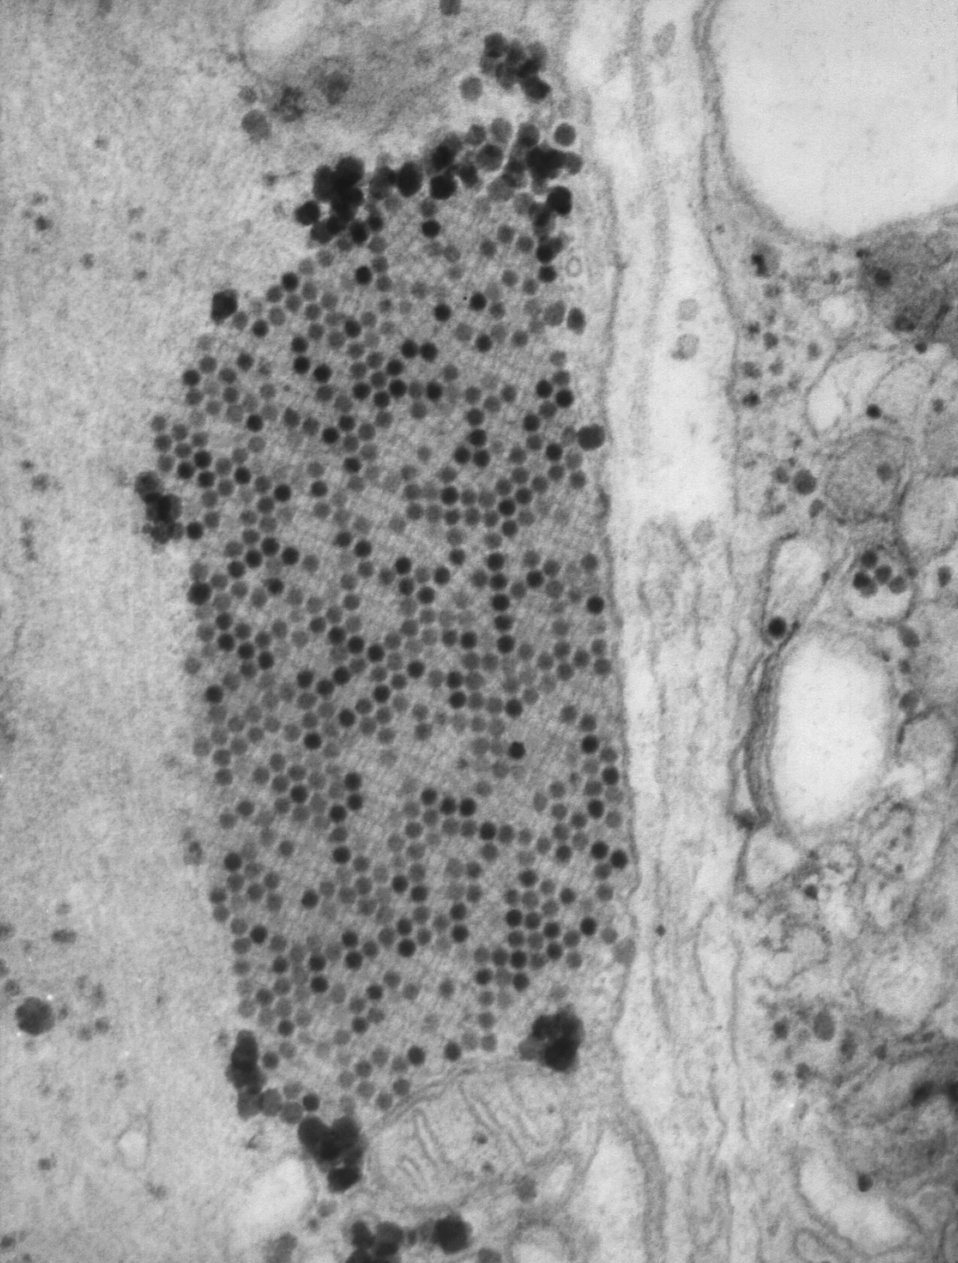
This transmission electron micrograph (TEM) revealed the presence of coxsackie B3 virus particles, which were found withing a specimen of muscle tissue. The coxsackie B3 virus is a member of the Picornaviridae family of viruses, and the genus, Enterovirus, as is the well-known, nearly eliminated, Poliovirus.